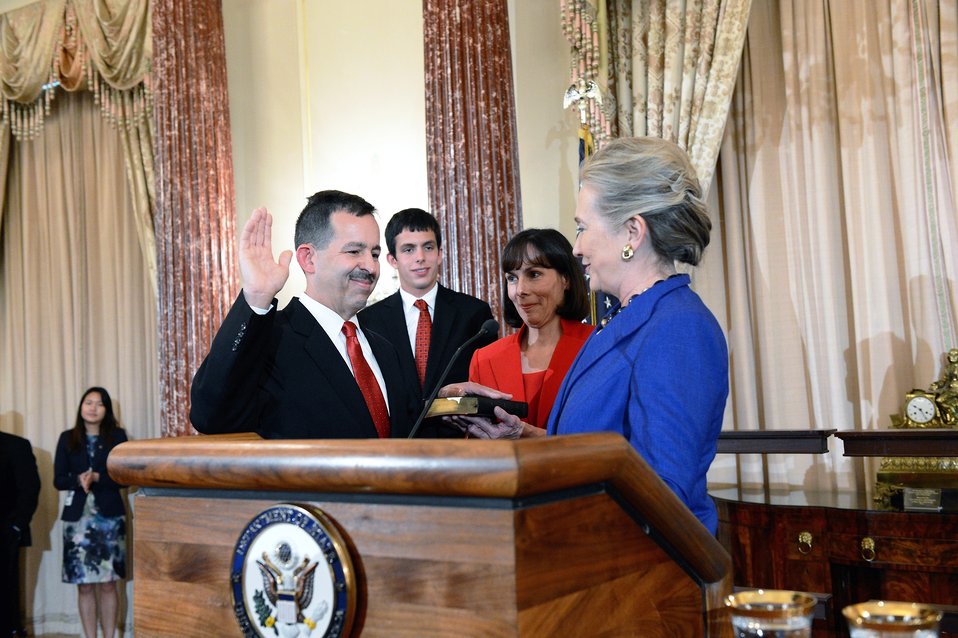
Secretary Clinton Hosts the Swearing-In Ceremony for Ambassador Mull

U.S. Secretary of State Hillary Rodham Clinton hosts the swearing-in ceremony for U.S. Ambassador to Poland Steve Mull at the U.S. Department of State in Washington, D.C., October 24, 2012.